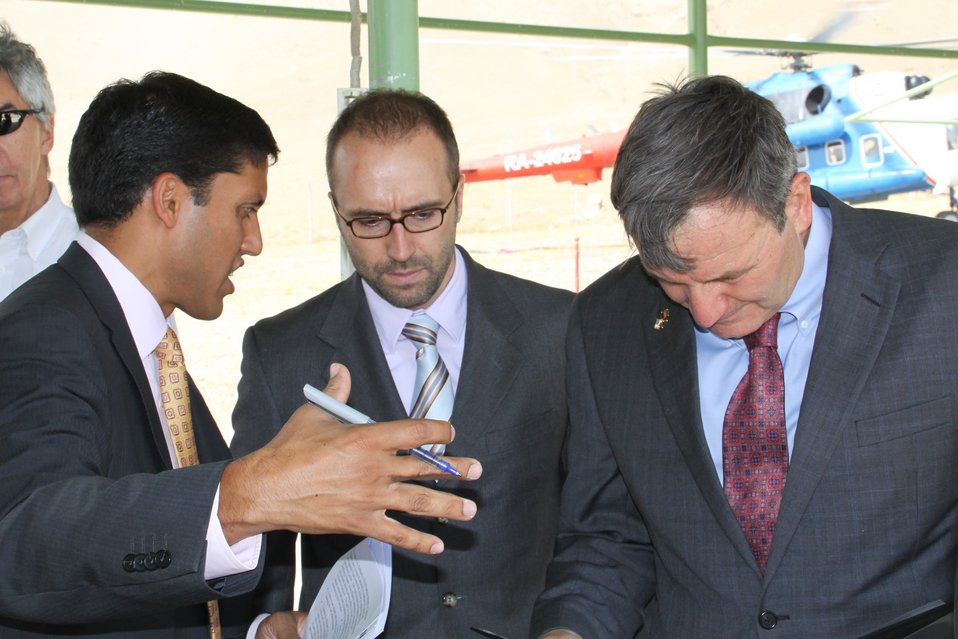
Badam Bagh Farm